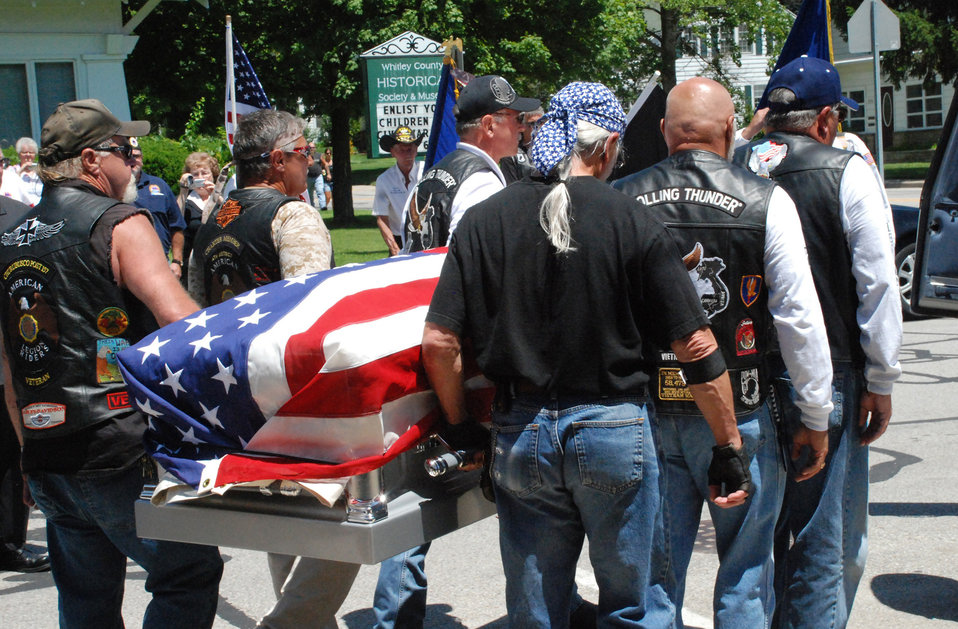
Tech. Sgt. Roy Prater

Vietnam veterans served as pallbearers during the funeral of Tech. Sgt. Roy DeWitt Prater June 19, 2010, in Columbia City, Ind. Sergeant Prater was killed when his helicopter was shot down in the Vietnam War. His remains were recovered more than 25 years later.